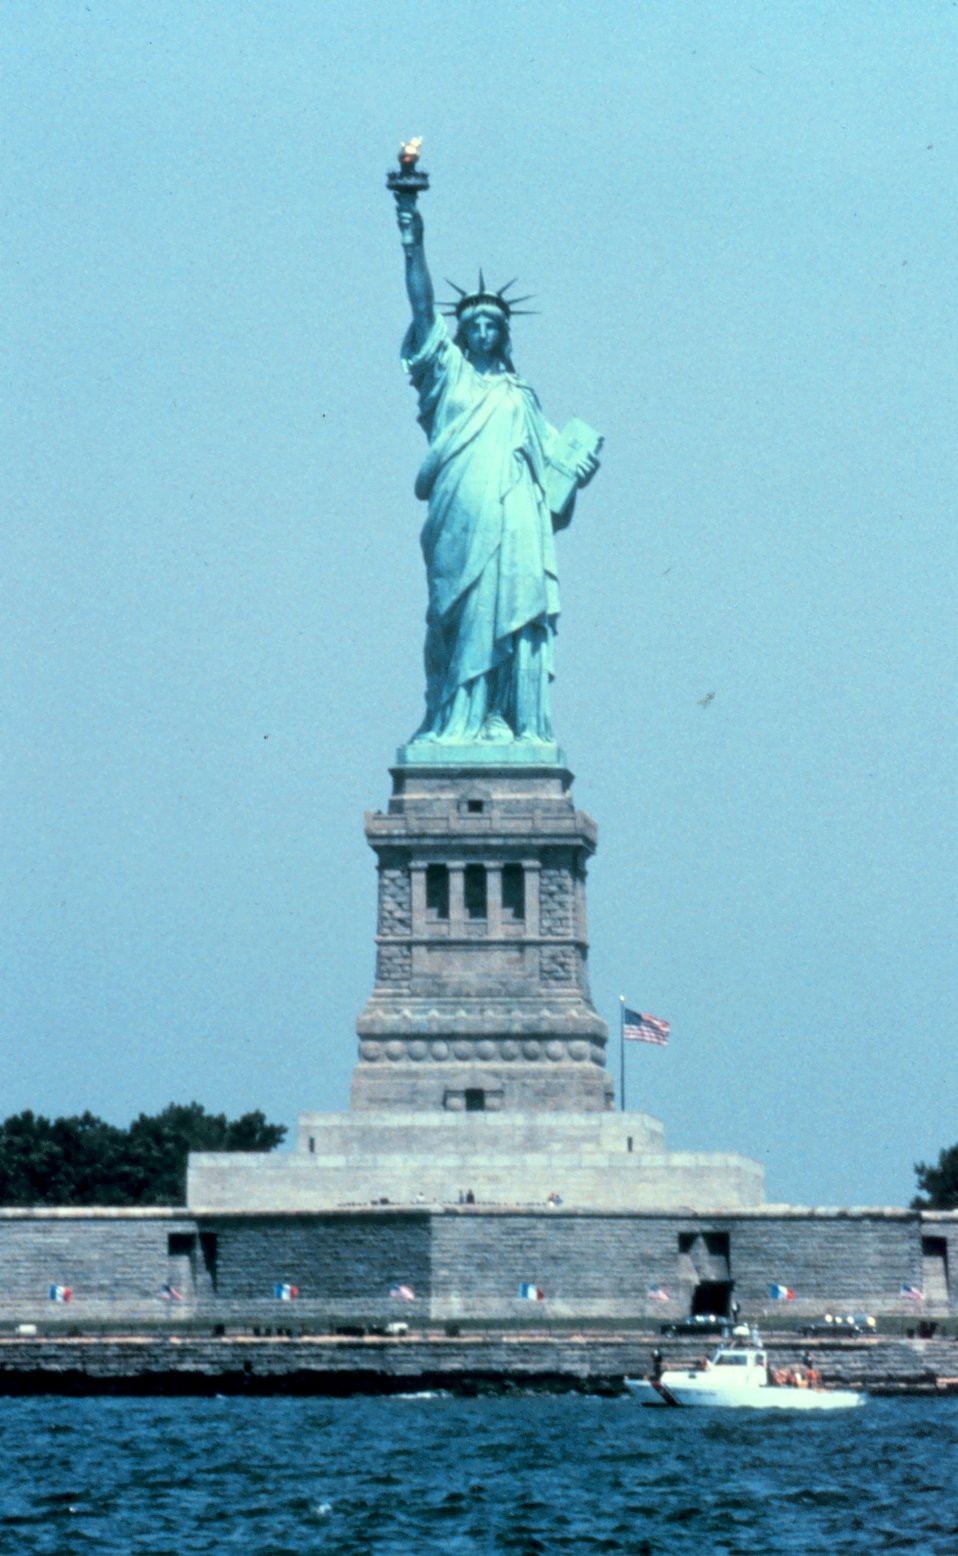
The Statue of Liberty, New York Harbor